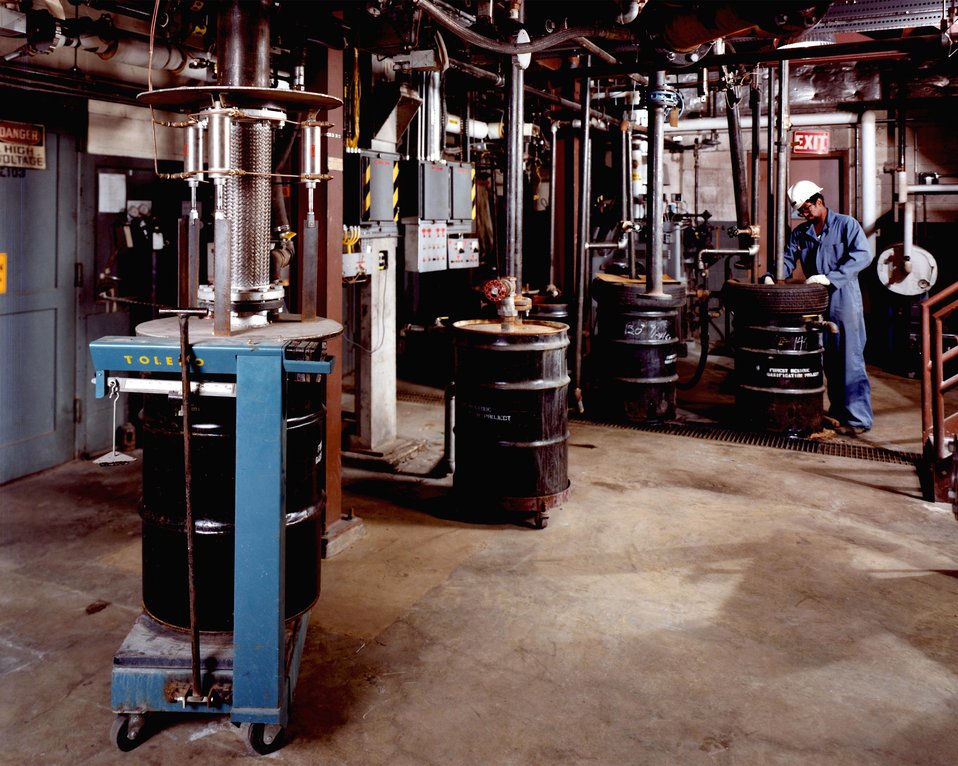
THE SOLIDS RECEIVING BARRELS AND DISCHARGE SYSTEM AT THE BASE OF THE GASIFIER.

THE MULTI-SOLID FLUIDIZED-BED GASIFICATION TECHNOLOGY IS A METHOD OF CONVERTING BIOMASS, E.G., WOOD CHIPS, INTO METHANE-RICH GAS THAT COULD BE USED IN PLACE OF NATURAL GAS.THE METHOD USES A CHEMICAL CATALYST IN A REACTOR SYSTEM TO GASIFY BIOMASS. THIS REACTOR IS LESS COMPLEX IN DESIGN THAN A COAL GASIFICATION PROCESS AND ALLOWS THE USE OF SMALLER UNITS.